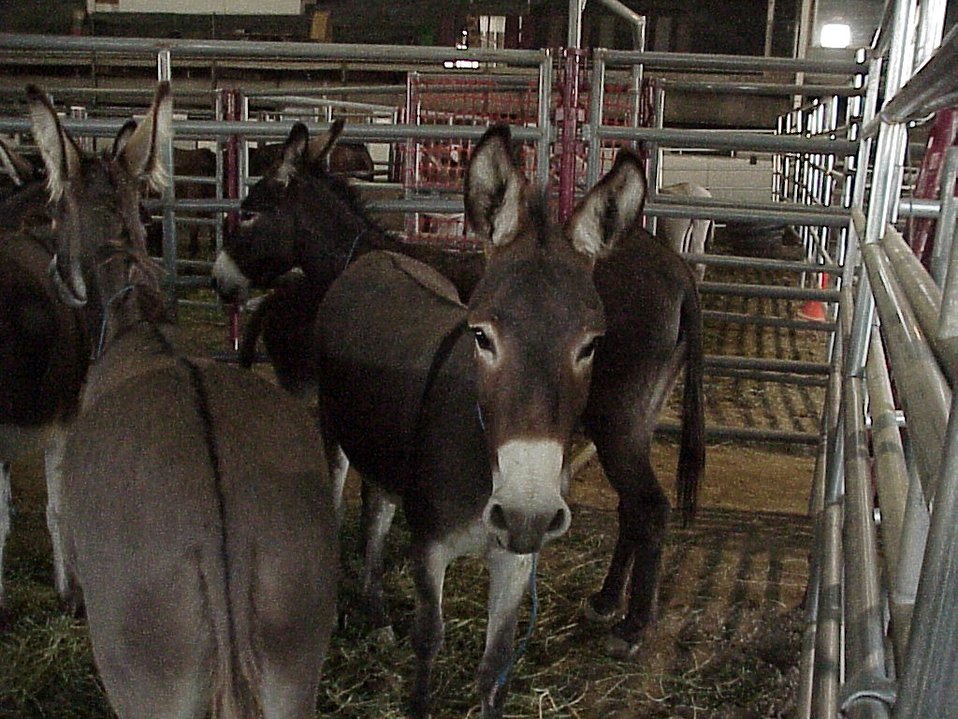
Burros Horse Gentler Lewiston Wild Horse and Burro Adoption Program Auction WHB indoor auction Cottonwood Field Office UCSC Upper Columbia Salmon Clearwater District